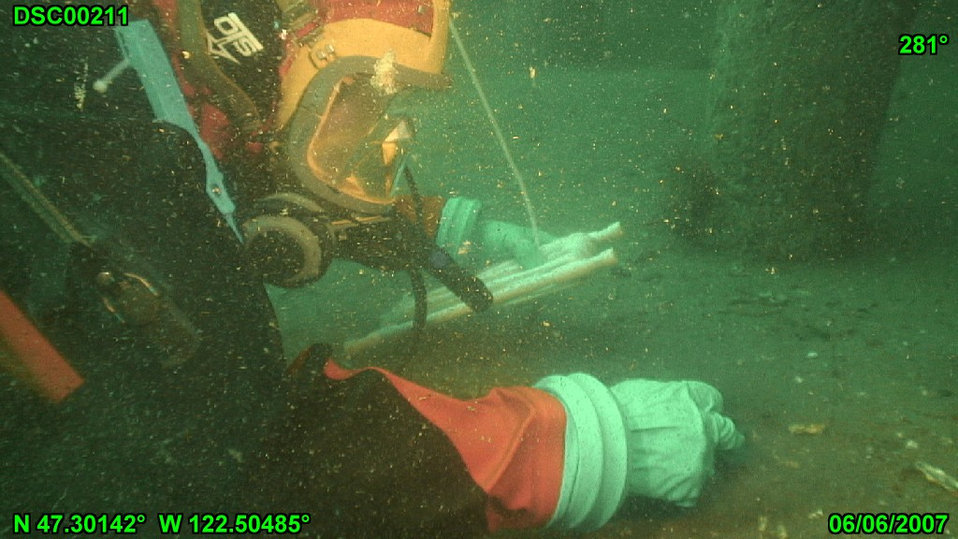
EPA Diver Maps Superfund Cap

EPA Diver Rob Rau uses a towed GPS float to take geolocated pictures and map features on the ASARCO Superfund Site sediment cap.

That information can help determine areas that might require cap maintenance.